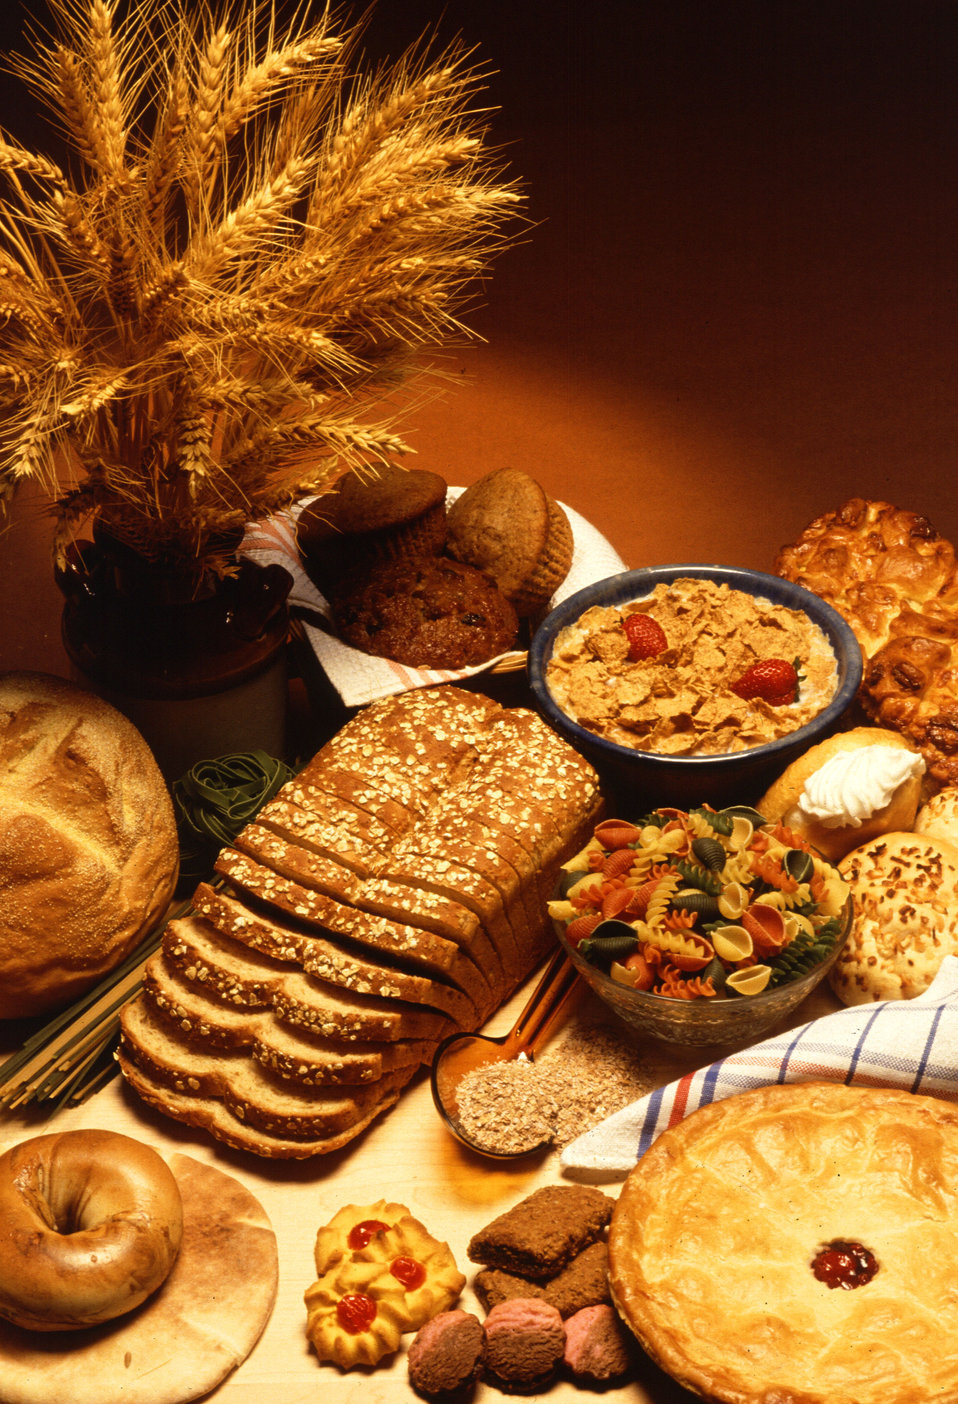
Breakfast, lunch, dinner, and snacks almost always include foods made from hearty wheat.